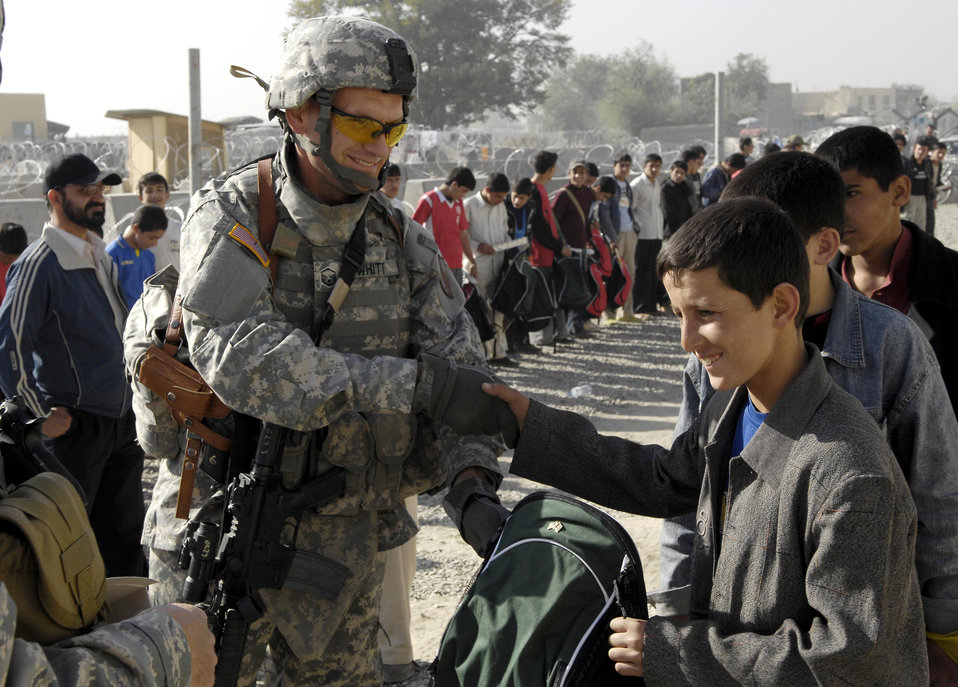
Good neighbors

Master Sgt. William Whitt passes out soccer balls and gear to local children from the Kabul Youth Soccer League Oct. 22 outside the gate at Kabul International Airport, Afghanistan. The equipment was donated by businessmen and supporters from Tennessee, Georgia and California.